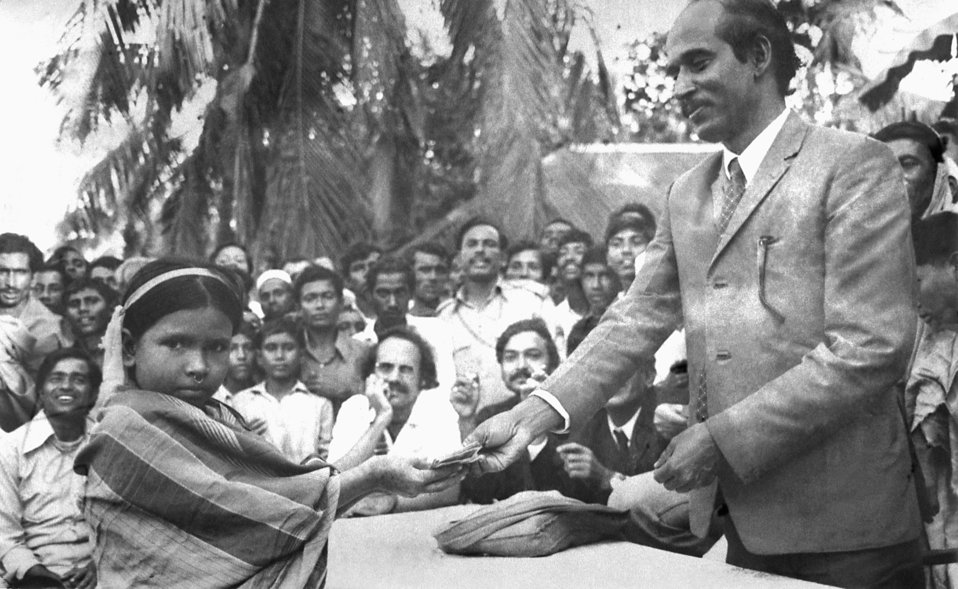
This 8 year old girl named Bilkisunnessa, left her mark on history when she reported the last known, naturally-occurring smallpox case in the world. The patient was a 2 � year old girl named Rahima Banu. This 1975 photograph was captured as Bilkisunnessa was in the process of publically receiving her 250 Taka reward. The Taka is the official currency of Bangladesh, and is produced in 8 different denominations. All rewards were handed out in a public place. Early on during the eradication campaign, the reward was 50 Taka, but as the campaign turned up fewer, and fewer cases, the reward grew to 250 Taka